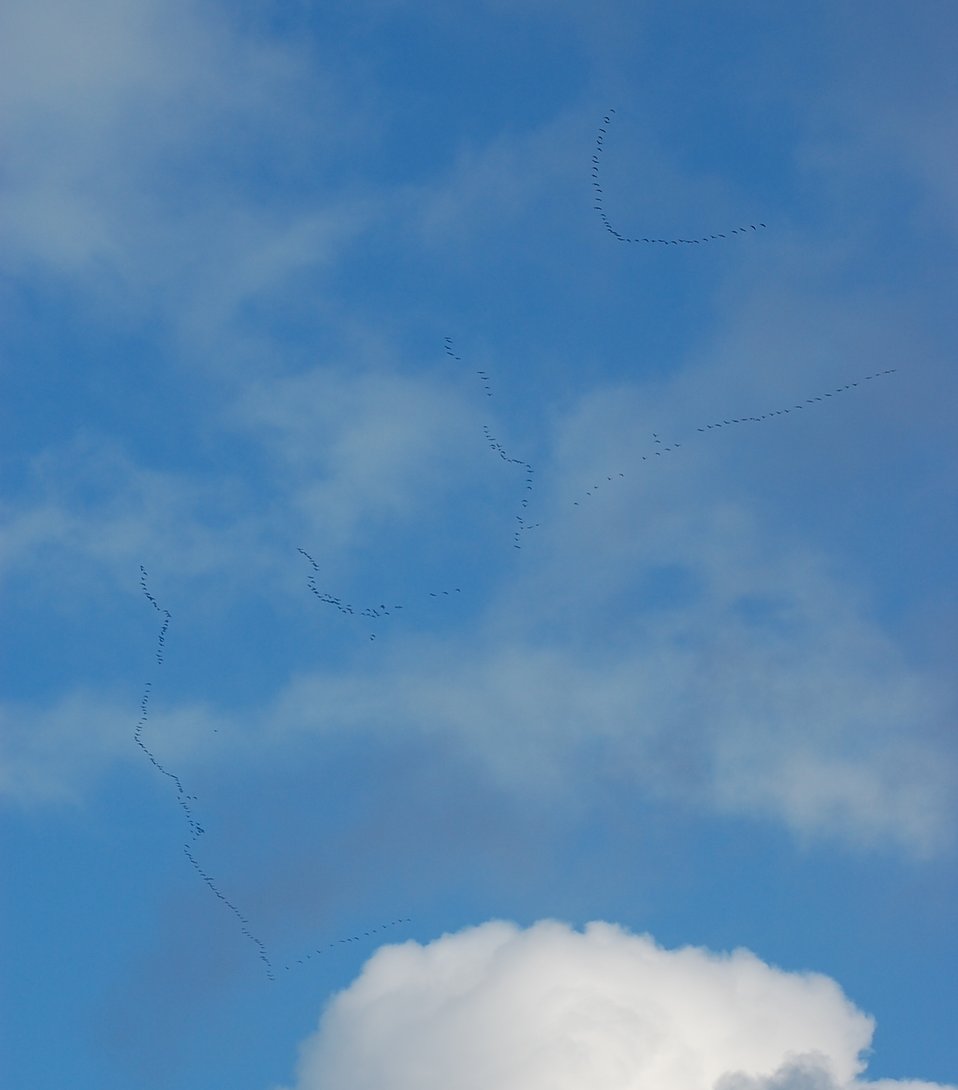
Cackling geese fly over

Cackling Geese migration, Izembek National Wildlife Refuge